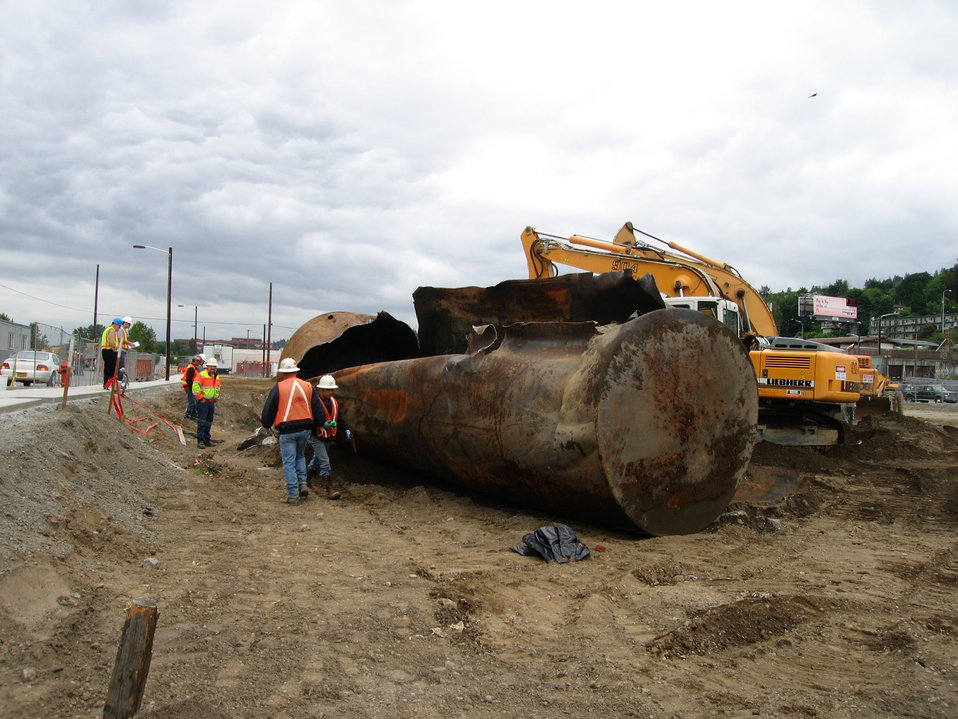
BEFORE: Portland, OR

The soils and groundwater of this former storage site in Portland, OR were contaminated with volatile organic compounds before receiving EPA Brownfields funding.